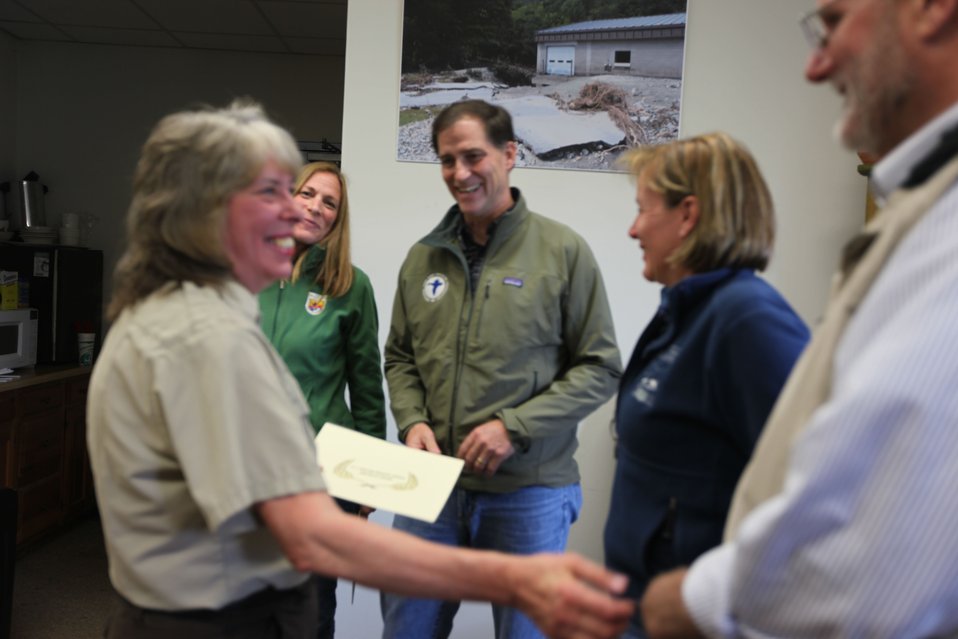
Dan Ashe awards Judy Romero

U.S. Fish & Wildlife Service Director Dan Ashe visits the Northeast Region
for a tour of the White River National Fish Hatchery in Bethel, Vermont on
April 27, 2012. The hatchery was devastated by Tropical Storm Irene and
Dan Ashe had the chance to meet and thank the staff for their heroic work.
Director Ashe also visited restoration/flood response/fish passage project
sites in Rochester, Vermont and met with local officials and staff from the
White River Partnership.